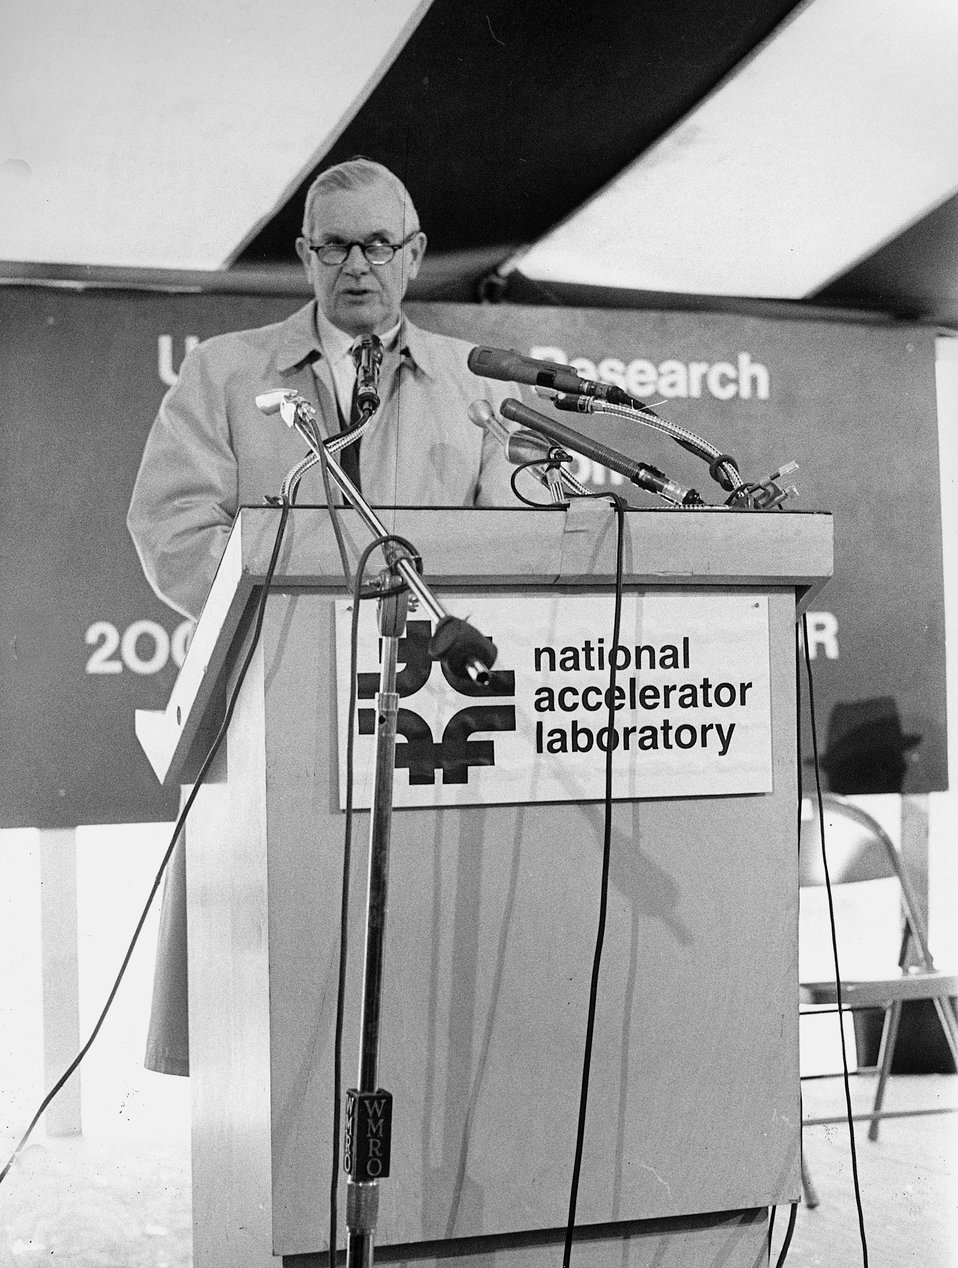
Gerald Tape, Commissioner, AEC, addresses guests at the Linac groundbreaking. 1968